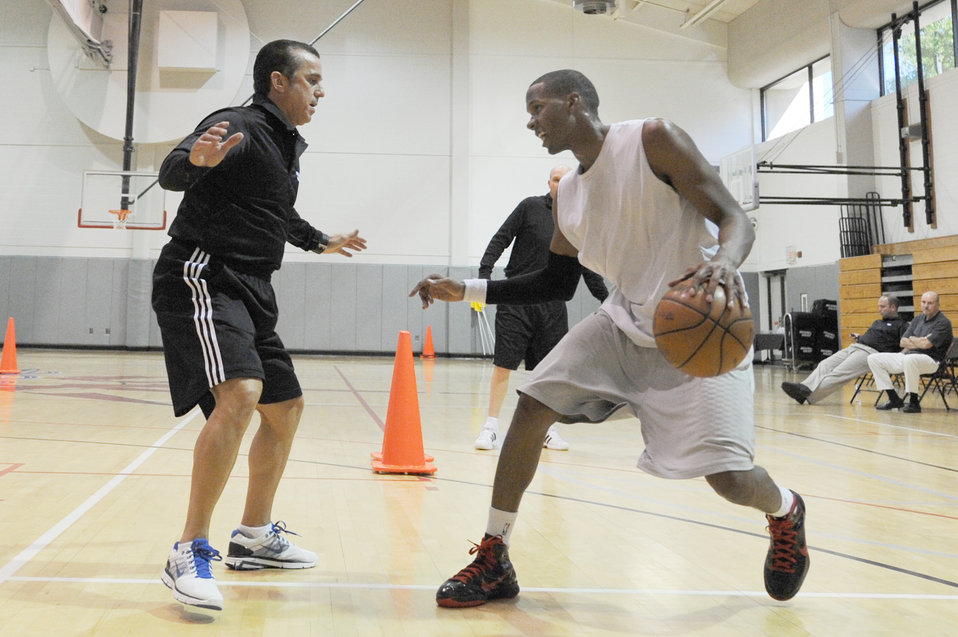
Antoine Hood

Capt. Antoine Hood runs an offensive drill with Octavio DeLagrana during a work-out session Sept. 29, 2010, at Hurlburt Field, Fla. Captain Hood played college basketball at the Air Force Academy from 2002 through 2006 and after graduation played briefly with the NBA's Denver Nuggets. Captain Hood is assigned to the 919th Special Operations Wing and Mr. DeLagrana is a Miami Heat player development coach.